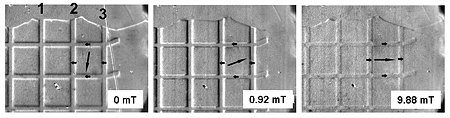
Magneto-optic imaging film

NIST MOIF (Magneto-optic imaging film) technique is unique in being able to image magnetic domains in real time while they are forming, growing and disappearing. Bright and dark regions represent stray magnetic fields as domains change. Here a series of MOIF images shows reversal of domains in a ferromagnetic film having a grid of antiferromagnetic strips on top as the external field increases to the right.